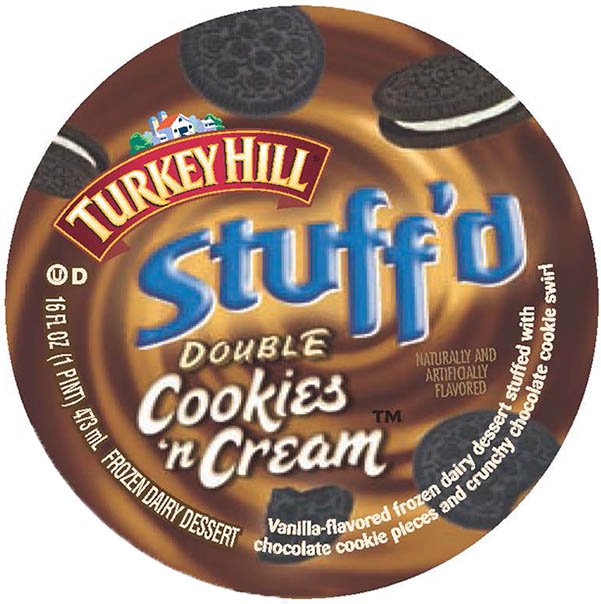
RECALLED – Ice Cream

October 4, 2013 – Product Recall – Turkey Hill Dairy Issues Voluntary Recall of Chocolate Peanut Butter Cup Premium Ice Cream,Fudge Ripple Premium Ice Cream, and Moose Tracks Stuff’d Frozen Dairy Dessert.